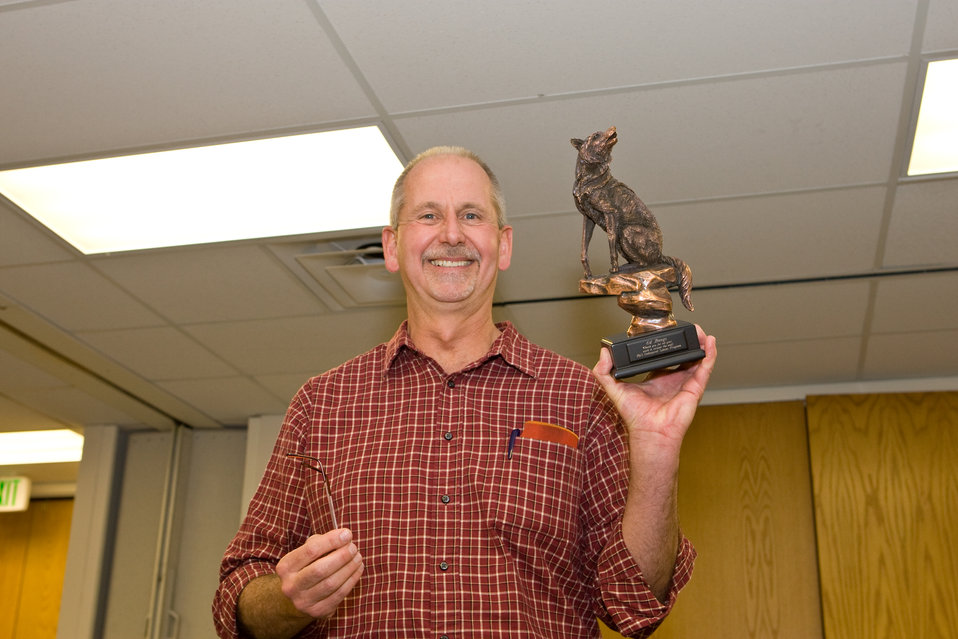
Ed Bangs Displays His Wolf Statue

On May 23rd, 2011 The U.S. Fish and Wildlife Service Mountain-Prairie Region honored three of the most influential individuals in wolf recovery in the Northern Rocky Mountains: Ed Bangs, Steve Fritts, and Margot Zallen. Ed Bangs started the event with an hour-long presentation, “Wolf Conservation: The Good, The Bad, and The Ugly.”

Following the presentation, Regional and National leadership recognized the imminent retirement of Ed, Steve, and Margot with a variety awards for their contributions.